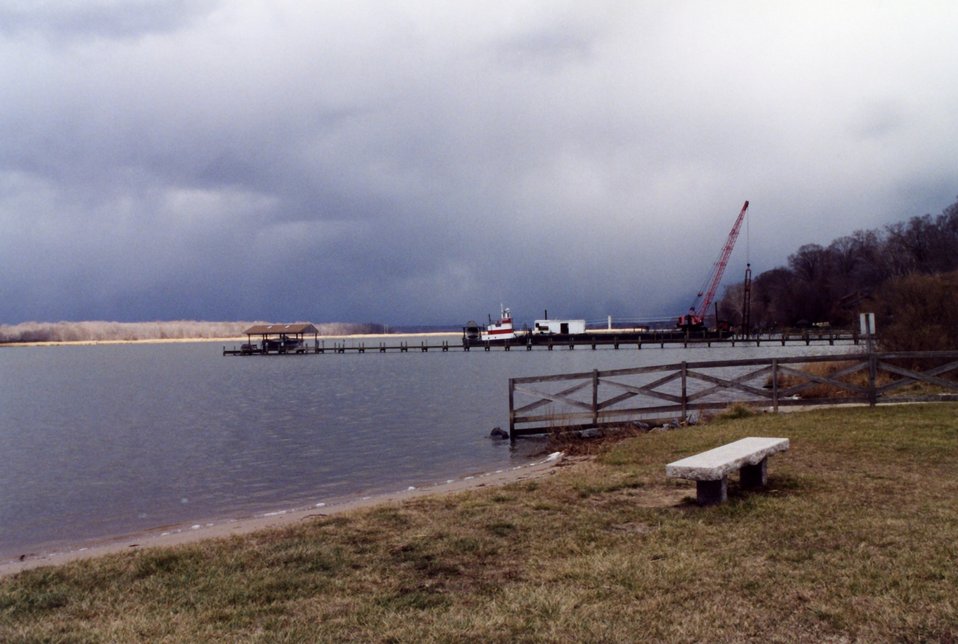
Construction of a new pier may have to wait for the storm to pass.